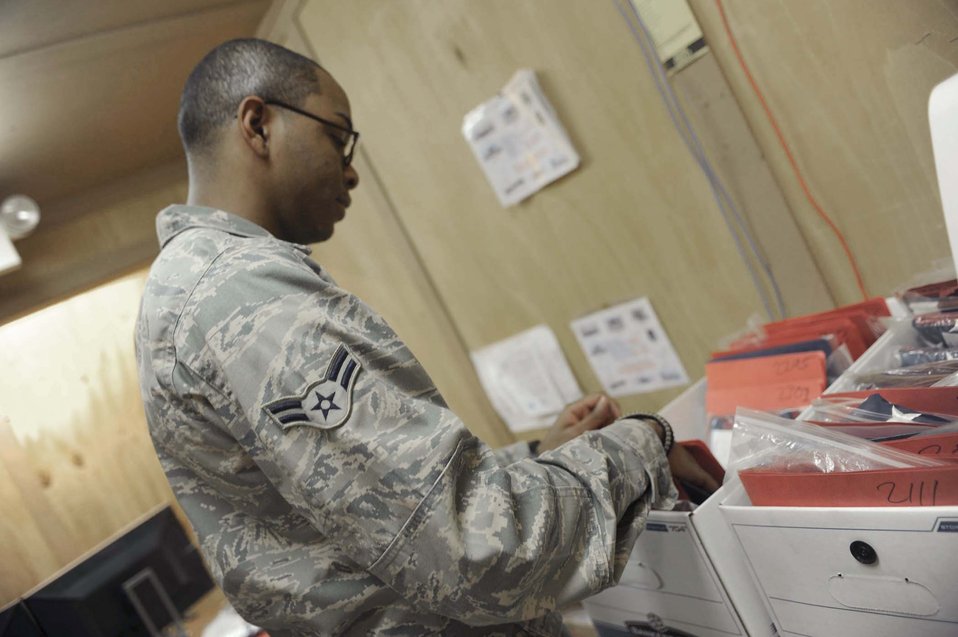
451st AEW members give flags wings to fly

Airman 1st Class Joshua Williams organizes flags that are waiting to be flown on 451st Air Expeditionary Wing aircraft Feb. 12, 2011, at Kandahar Airfield, Afghanistan. Airman Williams, is the flag flying program manager and is responsible for tracking all the flags in the program program.